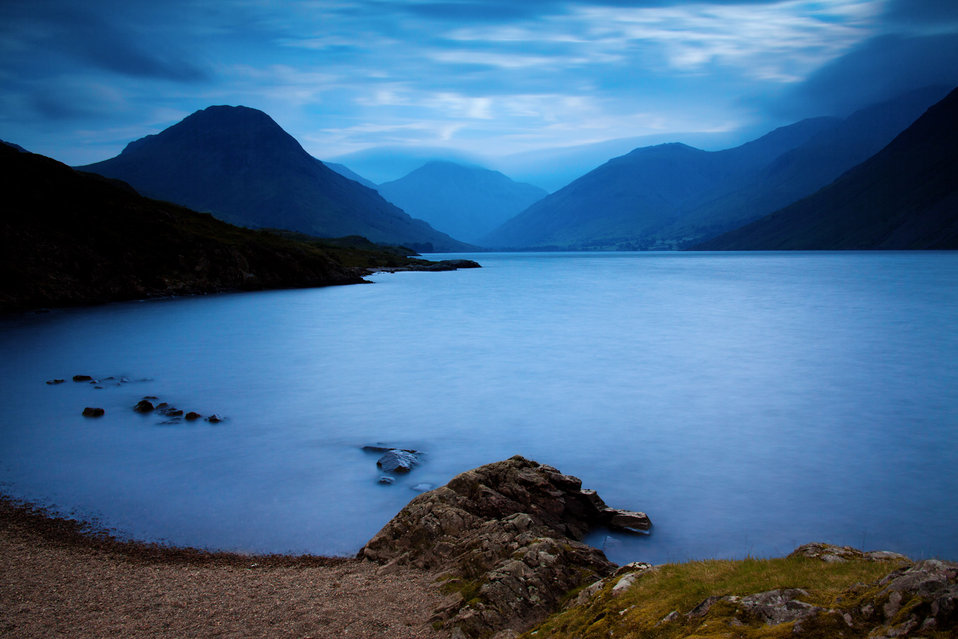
Wast water in lake district

Wast water lake in lake district in cumbria - united kingdom.